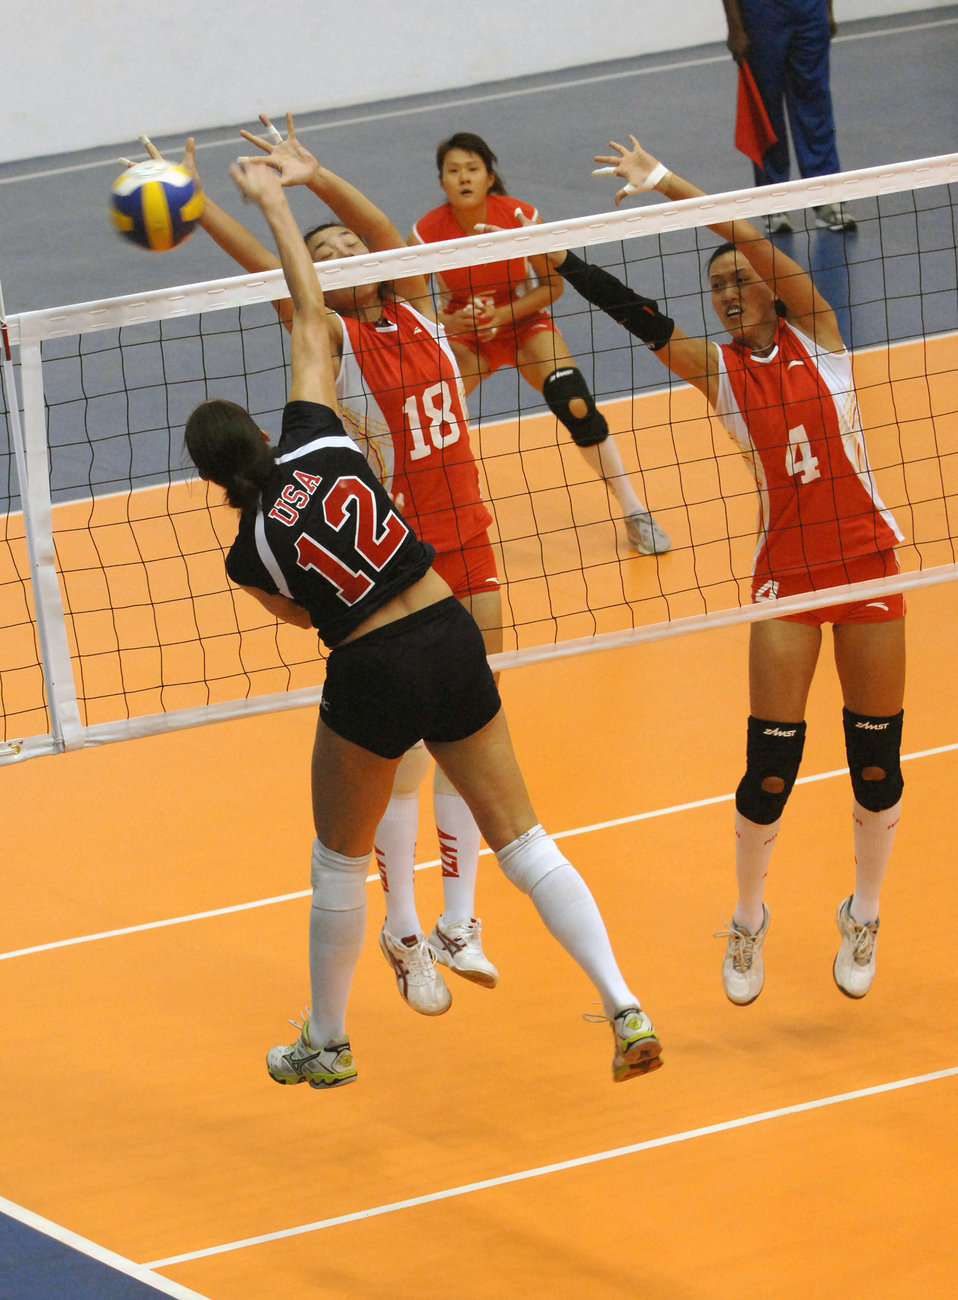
4th CISM World Military Games

Coast Guard Lt. Catharine Lori Johann drives a spike past Chinese blockers Oct. 14 during the U.S. women's first volleyball game at the Military World Games in Hyderabad, India. The U.S. women fell to the Chinese team in three games, 25-15, 25-11, 25-7. The Conseil Internationale du Sport Militaire's Military World Games event is the largest international military Olympic-style event in the world. In this year's fourth edition of the Games, 103 countries and more than 5,000 athletes are competing Oct. 14 to 21 in boxing, diving, soccer, handball, judo, military pentathlon, parachuting, sailing, shooting, swimming, volleyball and track and field. The purpose of the Military World Games is to promote